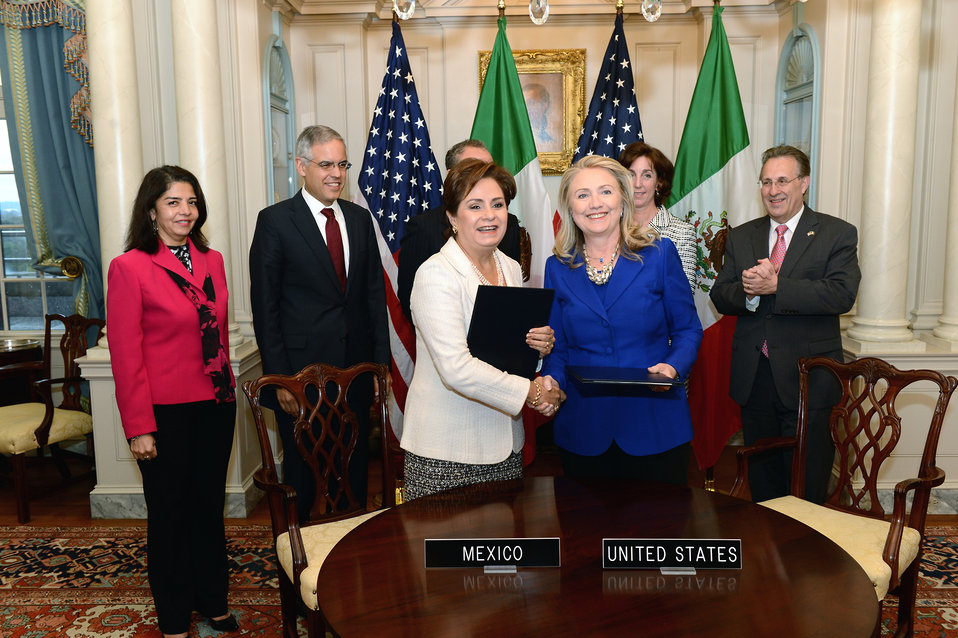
Secretary Clinton and Mexican Foreign Relations Secretary Espinosa Shake Hands

U.S. Secretary of State Hillary Rodham Clinton and Mexican Secretary of Foreign Relations Patricia Espinosa shake hands after signing the U.S.-Mexico Memorandum of Understanding (MOU) for the Promotion of Gender Equality, the Empowerment of Women and Women’s Human Rights at the U.S. Department of State in Washington, D.C., September 18, 2012.